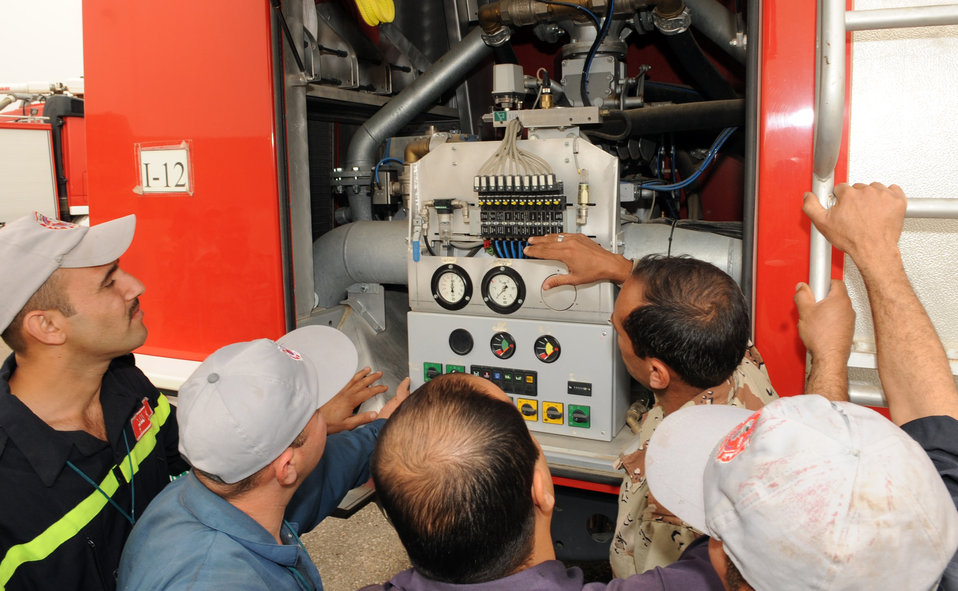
Iraqi, U.S. firefighters

506th Air Expeditionary Group and Iraq Training and Advisory Mission members facilitated a maintenance education day between the Province of Kirkuk Fire Department and the Iraq air force fire department April 12, 2010, at Kirkuk Regional Air Base, Iraq.